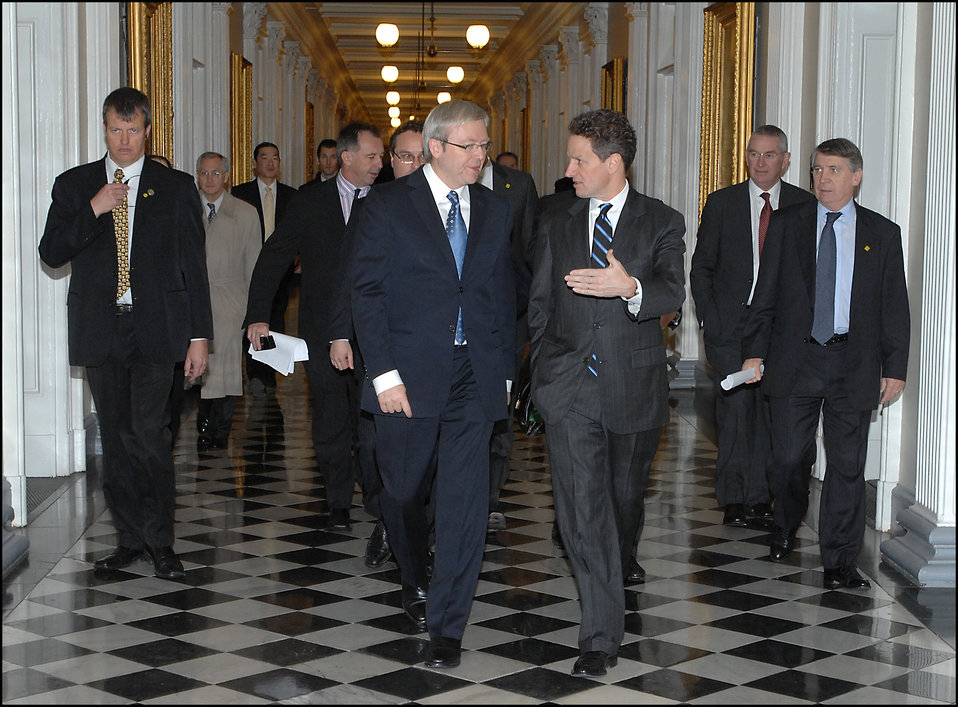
Australian Prime Minister Kevin Rudd

On March 26, 2009, Secretary Geithner met with Australian Prime Minister Kevin Rudd at Treasury.